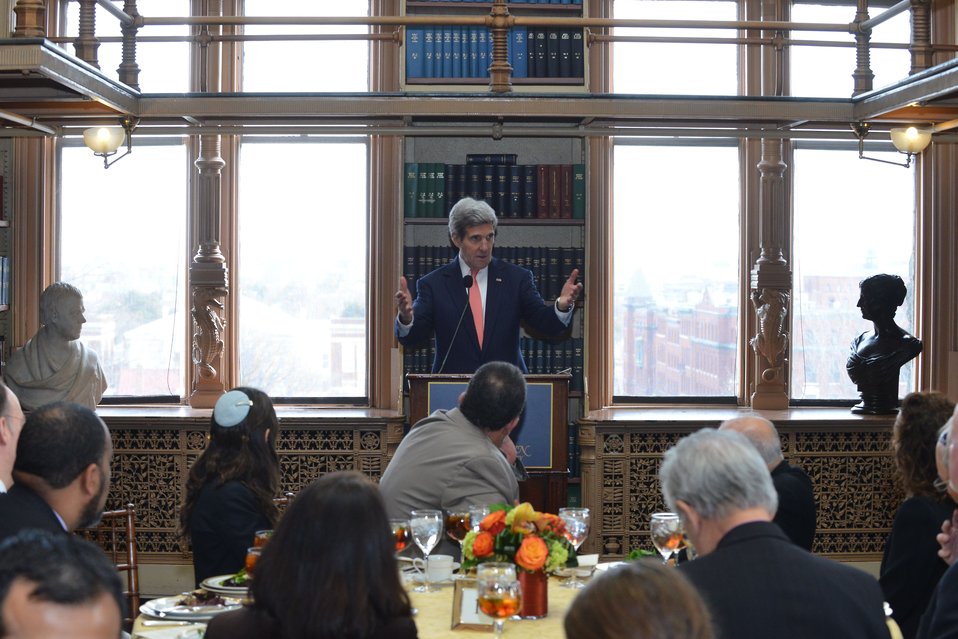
Secretary Kerry Delivers Remarks at the Georgetown University Interfaith Luncheon

U.S. Secretary of State John Kerry delivers remarks at the Georgetown University Interfaith Luncheon at Georgetown University in Washington, D.C., on January 28, 2014.